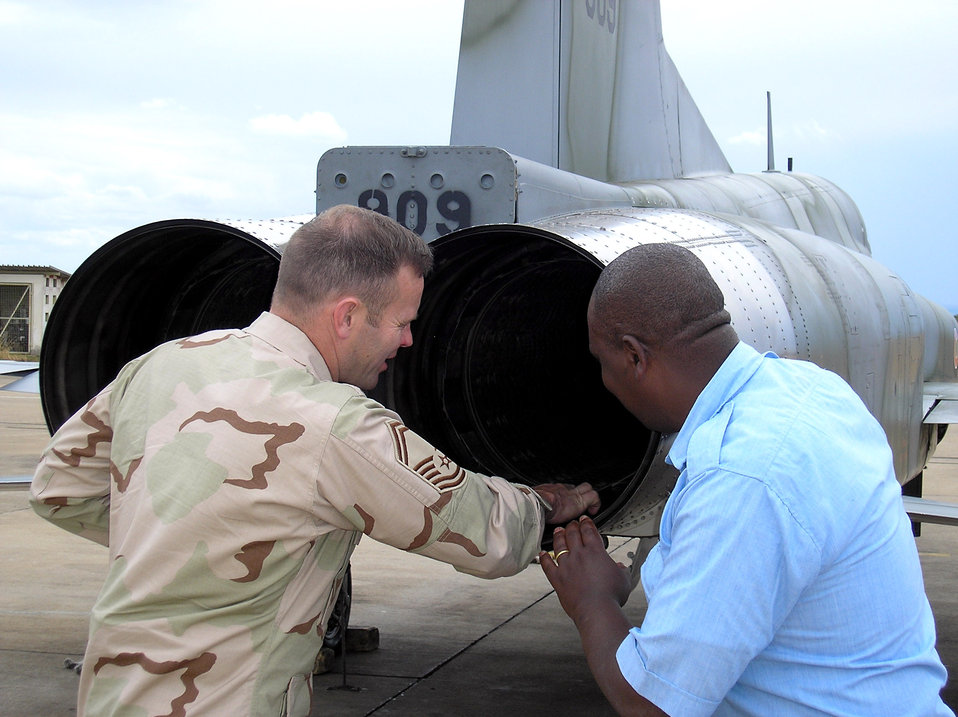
Air Force, Kenyan maintainers turn wrenches together

Senior Master Sgt. Daniel Yeck reviews the procedures for repairing the afterburner section on an F-5 fighter March 26 with a member of the Kenyan air force at Laikipia Air Base in Kenya. Sergeant Yeck is assigned to Air Education and Training Command headquarters at Randolph Air Force Base, Texas. He was part of an eight-man Air Force team visiting the East African nation to March 21 to 28 to improve aircraft maintenance processes.